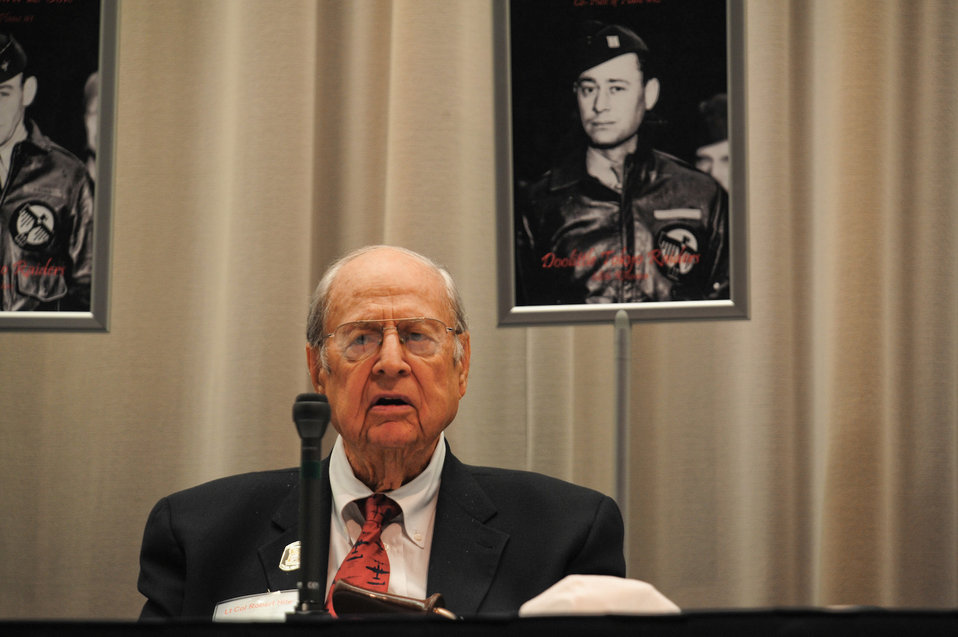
68th Doolittle Raiders Reunion

U.S. Air Force Lt. Col (ret.) Robert L. Hite, co-pilot of the sixteenth B-25 Mitchell Bomber that took part in the Doolittle Tokyo Raid, attends a press event at the National Museum of the U.S. Air Force at Wright Patterson Air Force Base, Ohio, April 16, 2010. Reflecting back on the historic flight, Lt. Col. Hite said,